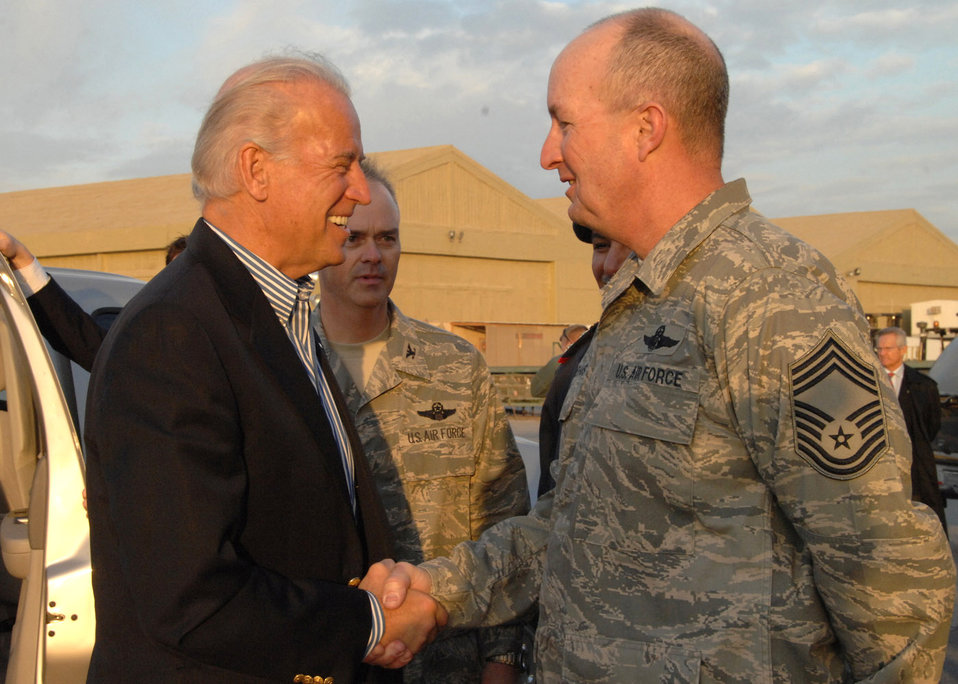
Vice president-elect meets Airmen in Southwest Asia

Vice President-elect Joe Biden shakes hands with Chief Master Sgt. Dave Niehaus Jan. 12 at an air base in Southwest Asia. Vice President-elect Biden is headed into Iraq as part of his trip to the region. Chief Niehaus is the 387th Expeditionary Group superintendent.